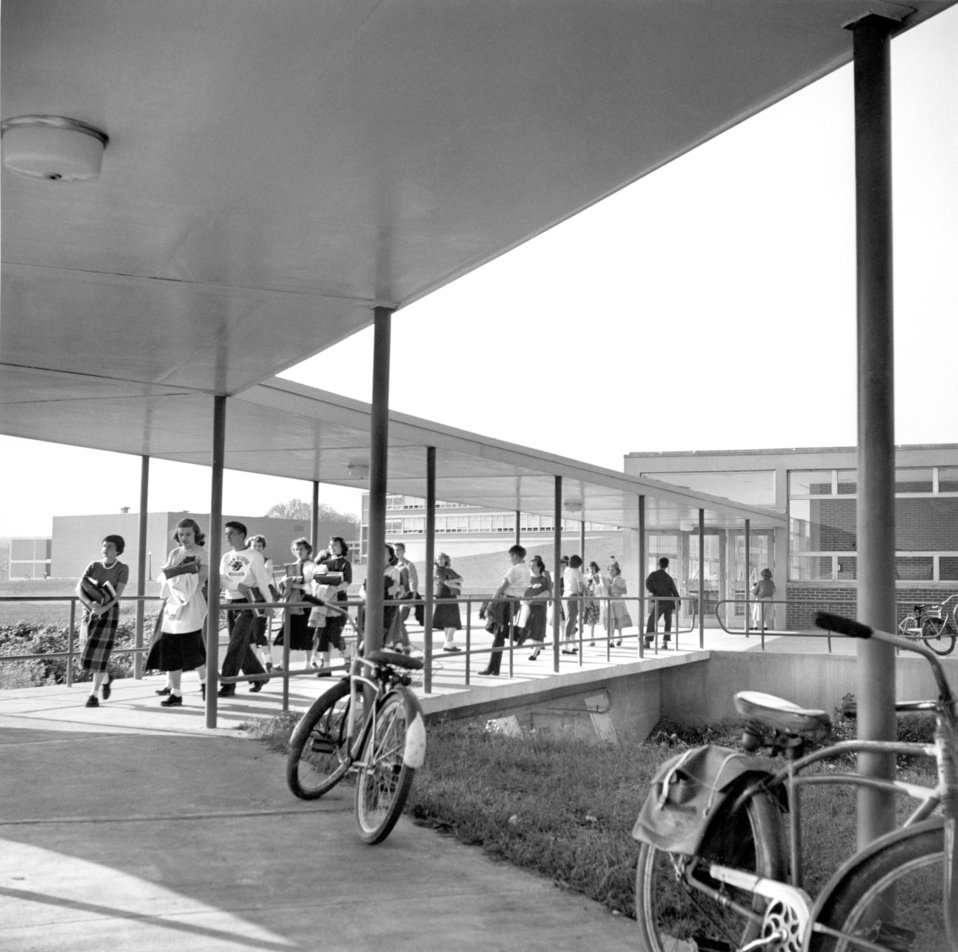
Oak Ridge High School 1951

7435-8 2 DOE photo Ed Westcott 10-19-1951 Oak Ridge Tennessee